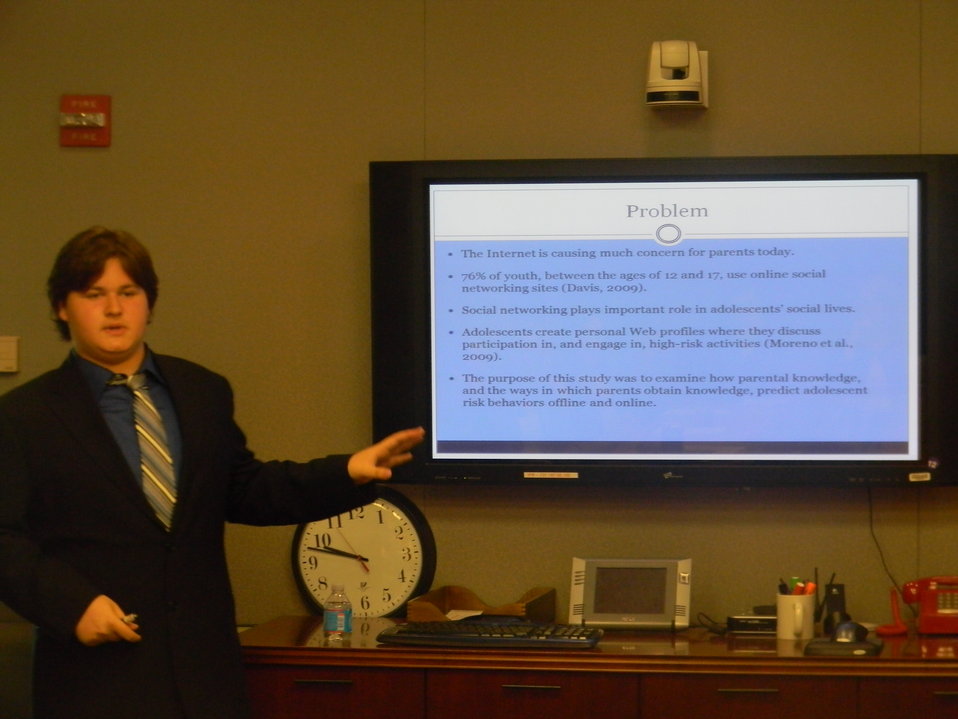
2nd place 2012 ISEF award winner Benjamin Jake Kornick